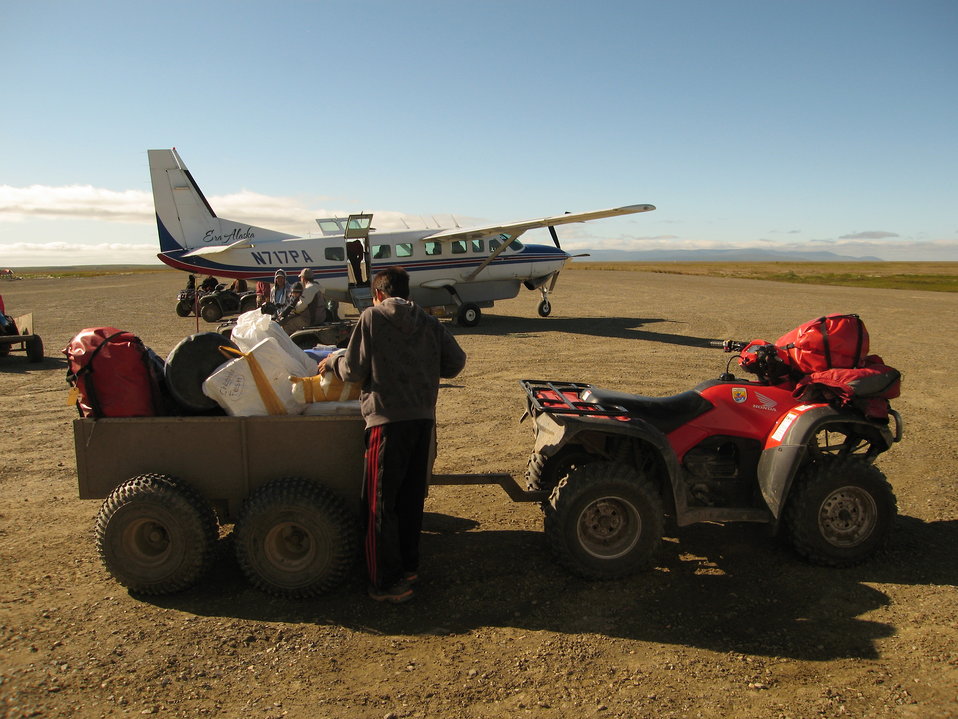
Getting gear to Old Chevak

Sometimes other airlines are used to charter gear from Bethel (headquarters) to a village near a field camp.

USFWS Yukon Delta NWR